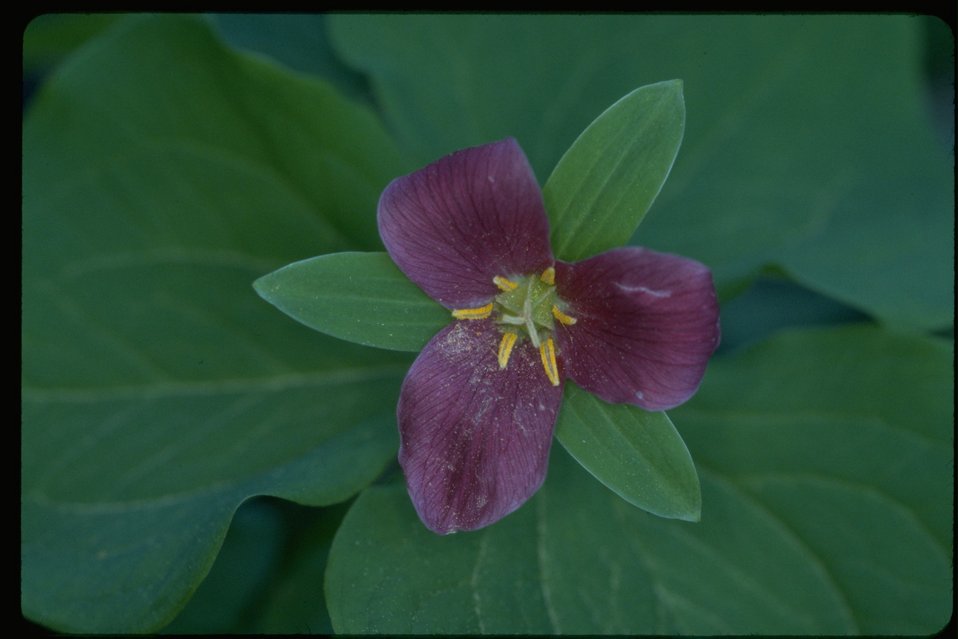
Medium shot of purple Trillium.